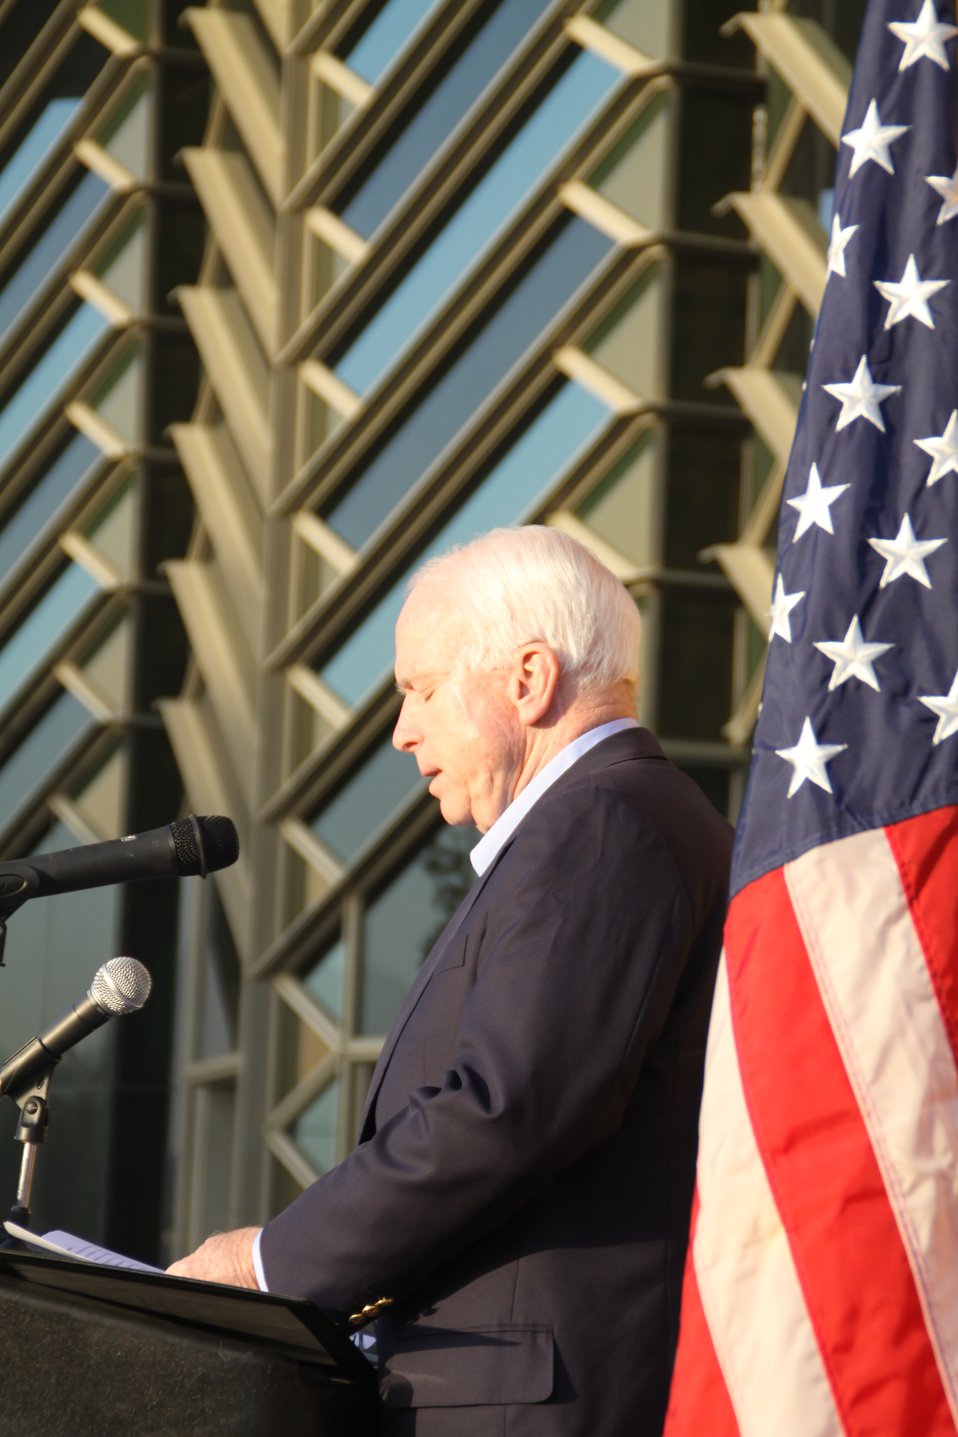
Senator McCain